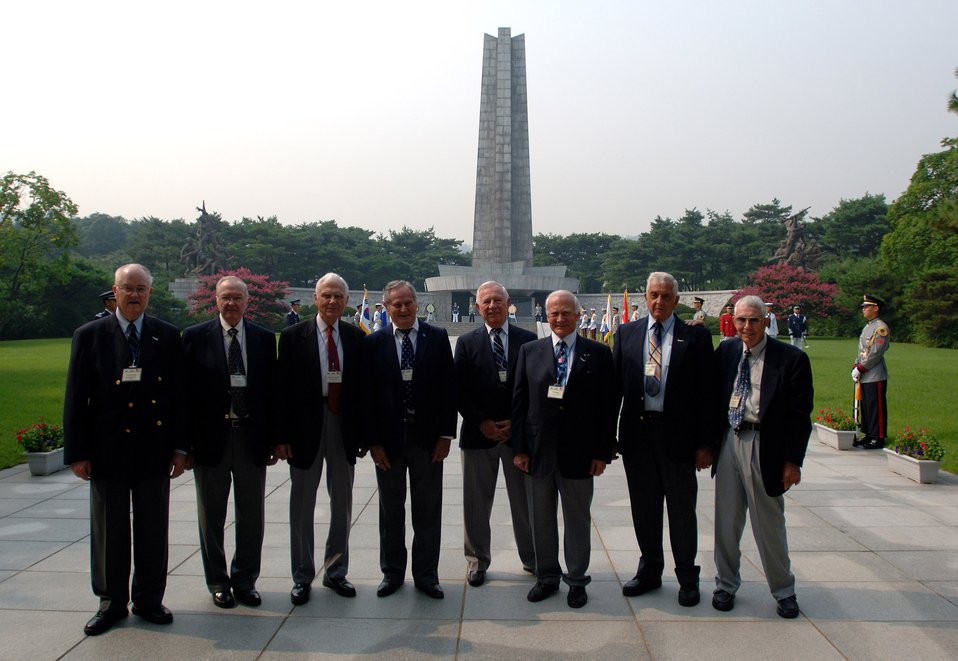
Korean War veterans give sage advice to Airmen

Retired Air Force members Maj. Gen. Carl G. Schneider (from left to right), Col. Robert Moxley, Lt. Gen. Charles G. Cleveland, Col. Ralph Gibson, Col. Pete Carpenter, Col. Buzz Aldrin, Col. Ken Shealy and Col. Harold Fischer stand before the Korean War Monument at the South Korean National Cemetery after a wreath laying ceremony Sept. 12. The South Korean government's Revisit Korea program invites war veterans each year to come to South Korea to honor the men and woman from 21 countries who served during the Korean War. Nearly 25,000 veterans have participated in this program since 1975.